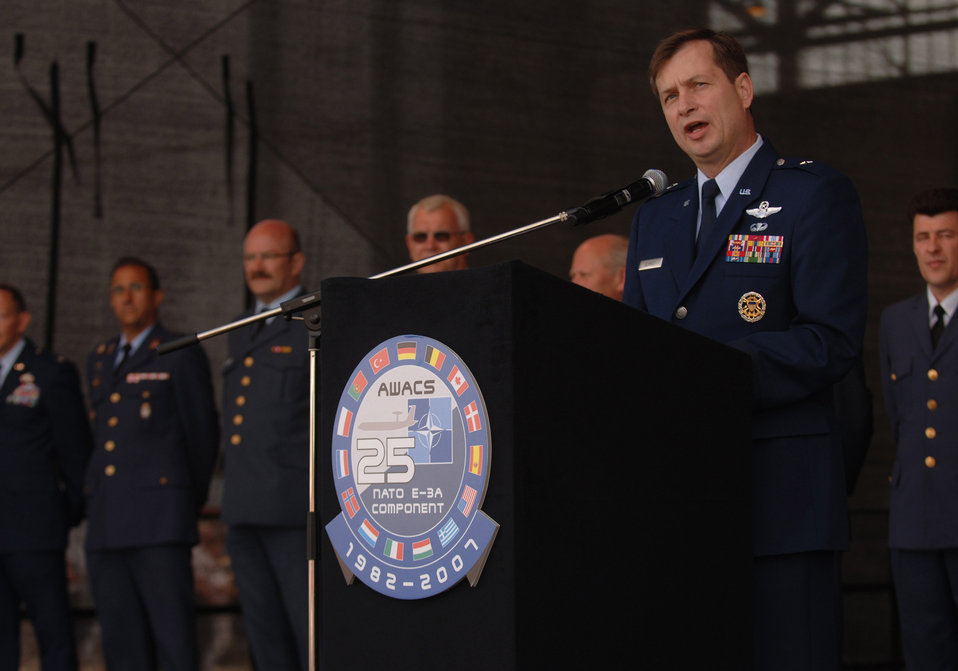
NATO celebrates 25th anniversary of E-3's arrival

Brig. Gen. Stephen P. Schmidt speaks to several thousand German, Belgian and Dutch citizens June 16 at Geilenkirchen NATO Air Base, Germany, during the 25th anniversary celebration of the aircraft's initial operations out of the NATO installation. General Schmidt is the NATO E-3 AWAC component commander.